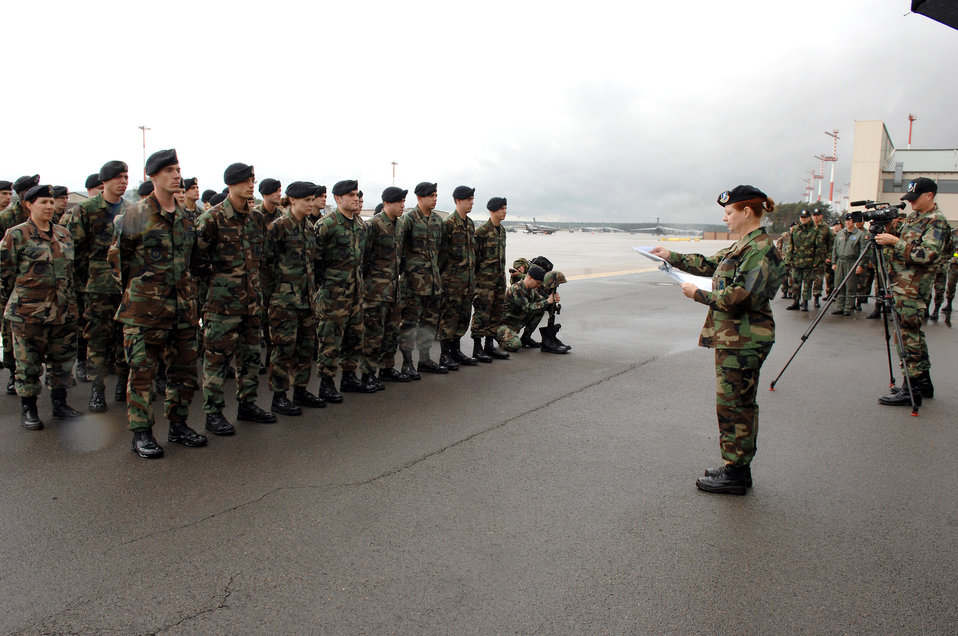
Ramstein security forces honor fallen comrades

Master Sgt. Jenny Luttrell leads the Final Guard Mount Ceremony May 16 at Ramstein Air Base, Germany. The ceremony, which recognizes fallen security forces members, was held in conjunction with National Police Week. Sergeant Luttrell is a 435th Security Forces Squadron member.